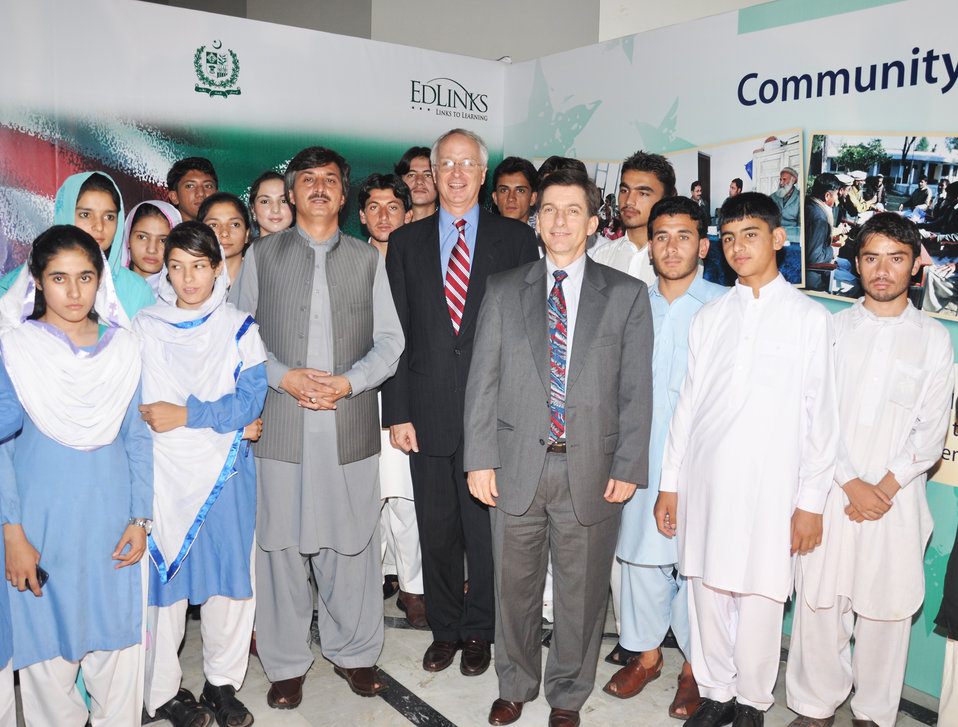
USAID Education Project in FATA and Malakand

Islamabad, July 26, 2011 – U.S. Ambassador Cameron Munter, USAID Mission Director Andrew Sisson, and Education Minister for Khyber Pakhtunkhwa Sardar Hussain Babak with the students from Malakand and FATA who have benefited from the USAID ED-LINKS project.

Students celebrated completion of USAID’s ED-LINKS project in FATA and Malakand. The project has improved schooling for 450,000 students in over 700 schools in FATA and Malakand over the past three years. In support of priorities established by the governments of KP and FATA, the project helped train more than 3,000 teachers, support teacher training institutes, and teach children in camps for internally displaced persons.